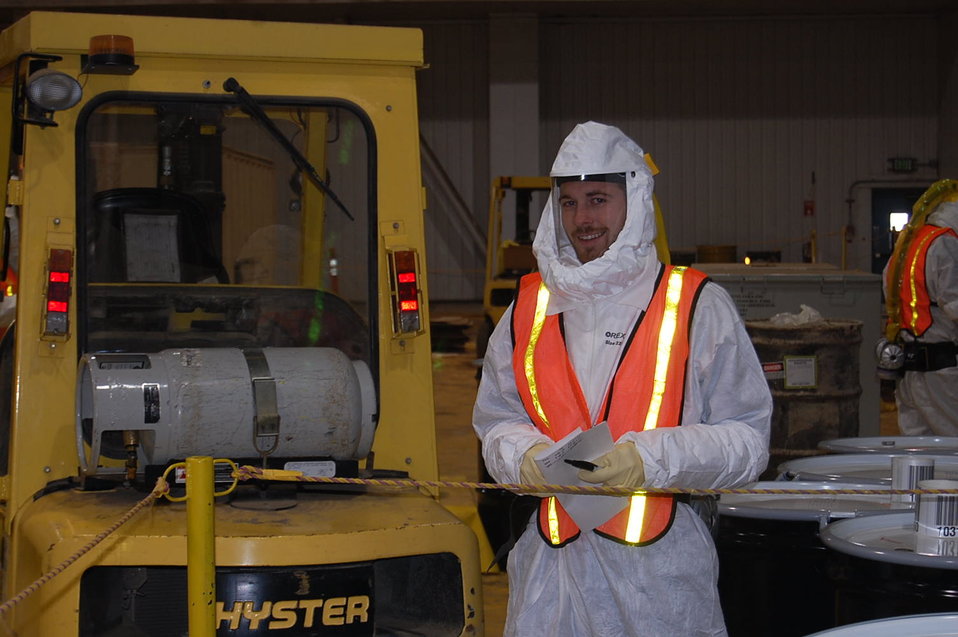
Recovery Act offers opportunity for employment, new skills for Idaho technician

Brandon Blackmon was one of 49 employees hired with Recovery Act funding by Bechtel BWXT Idaho, the manager and operator of the Advanced Mixed Waste Treatment Project (AMWTP) at the Idaho National Laboratory (INL).